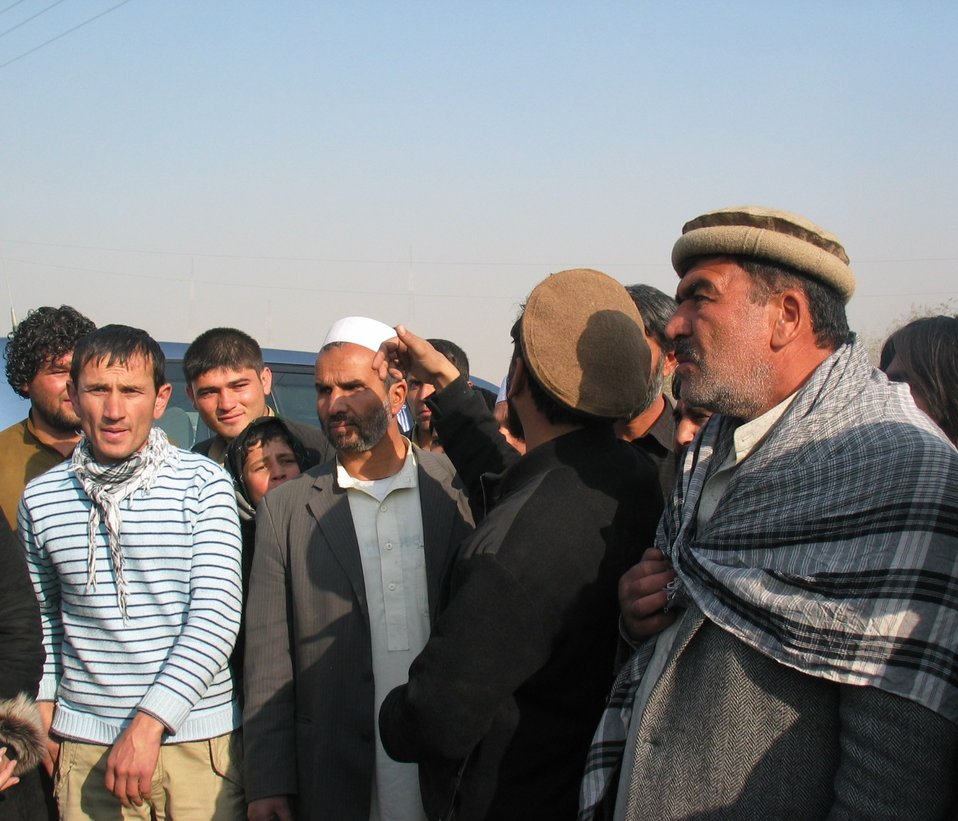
Kabul River Bridge Renovation, December 3, 2010